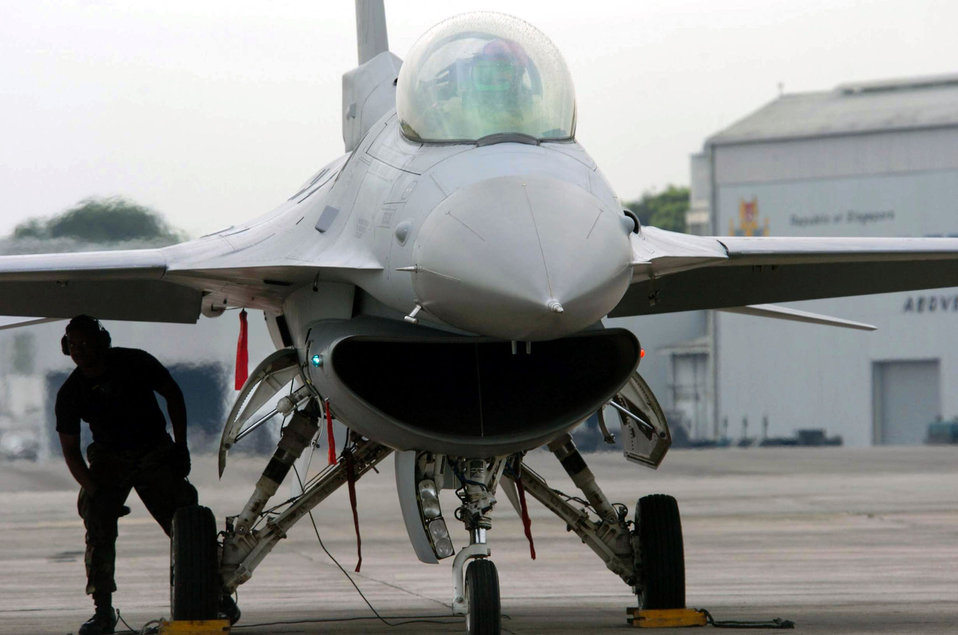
U.S., Singaporean Airmen train together

PAYA LEBAR AIR BASE, Singapore -- An F-16 Fighting Falcon crew chief from the 36th Fighter Squadron at Osan Air Base, South Korea, prepares to launch an aircraft here during Commando Sling 04-3. U.S. and Singaporean Airmen trained together using realistic dissimilar aircraft air-to-air combat tactics.